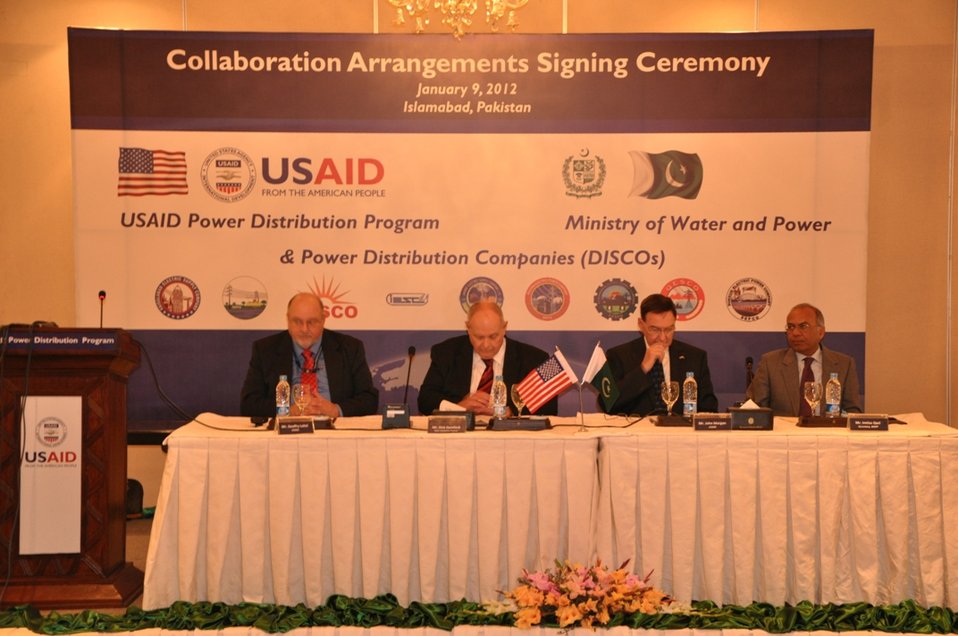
Collaboration Arrangements Signing Ceremony

All nine of Pakistan’s government-owned Power Distribution Companies (DISCOs) signed agreements today with the U.S. government to collaborate on improving energy supply to consumers.